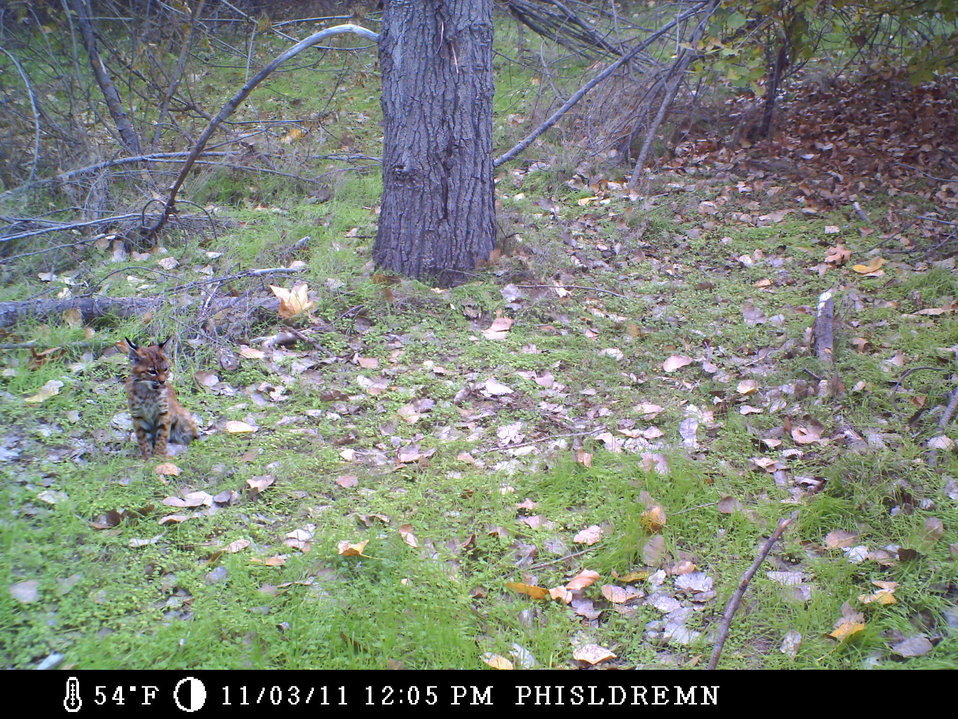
What's the hurry?

trail camera photo
Sacramento River National Wildlife Refuge, CA